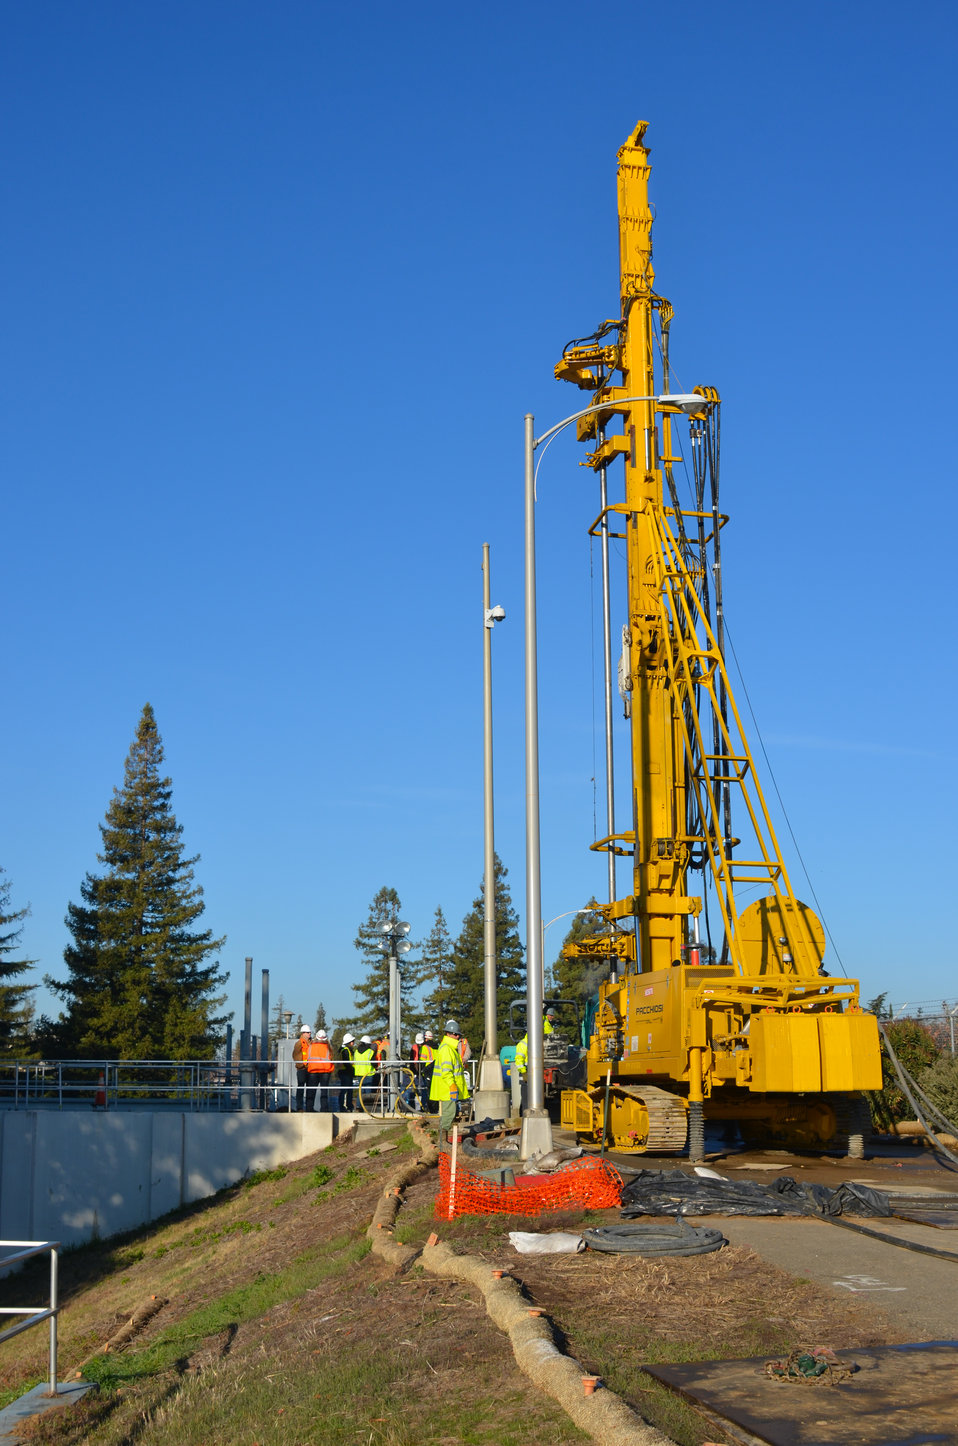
Jet grouting: a surgical approach to levee work

Crews operate a jet grout drill at a levee section along the American River in Sacramento, Calif., Dec. 11, 2013. This U.S. Army Corps of Engineers Sacramento District levee project at the E. A. Fairbairn Water Treatment Plant is using a precise construction method called jet grouting to inject a seepage cutoff wall around the plant’s buried utilities. The Corps installed more than 20 miles of seepage cutoff walls into American River levees between 2000 and 2002, but work was set aside for later where complicated encroachments existed such as utilities, power lines and bridges.